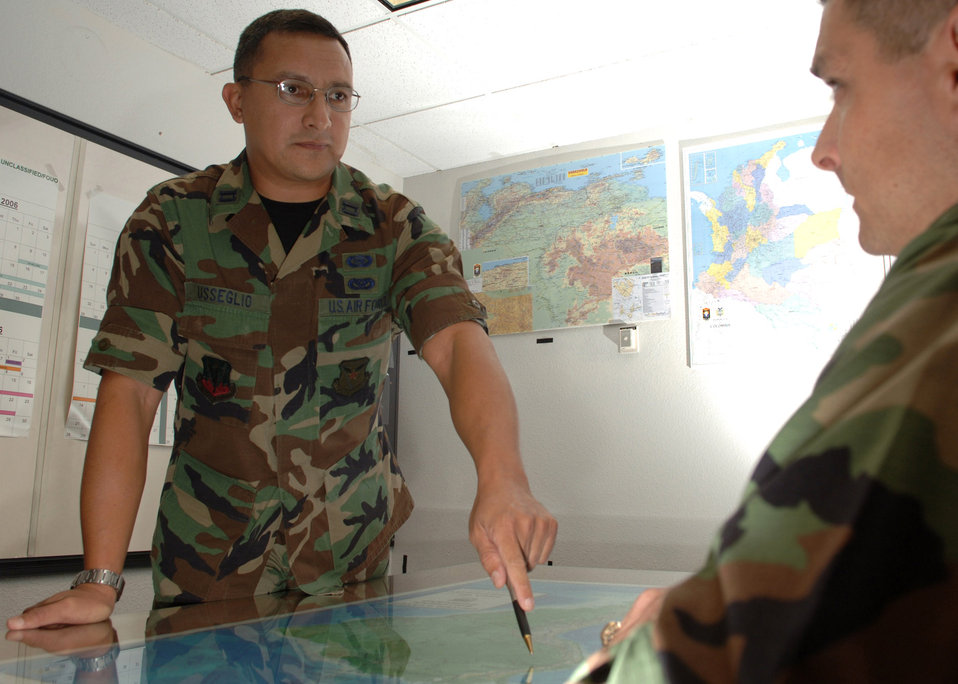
Bilingual Airman adds to mission

Capt. Atilio Usseglio helps bridge the language gap by using his bilingual skills with his counterparts in the Colombian Air Force. Captain Usseglio is an intelligence officer with the 612th Air Intelligence Squadron at 12th Air Force headquarters from Davis-Monthan Air Force Base, Ariz.